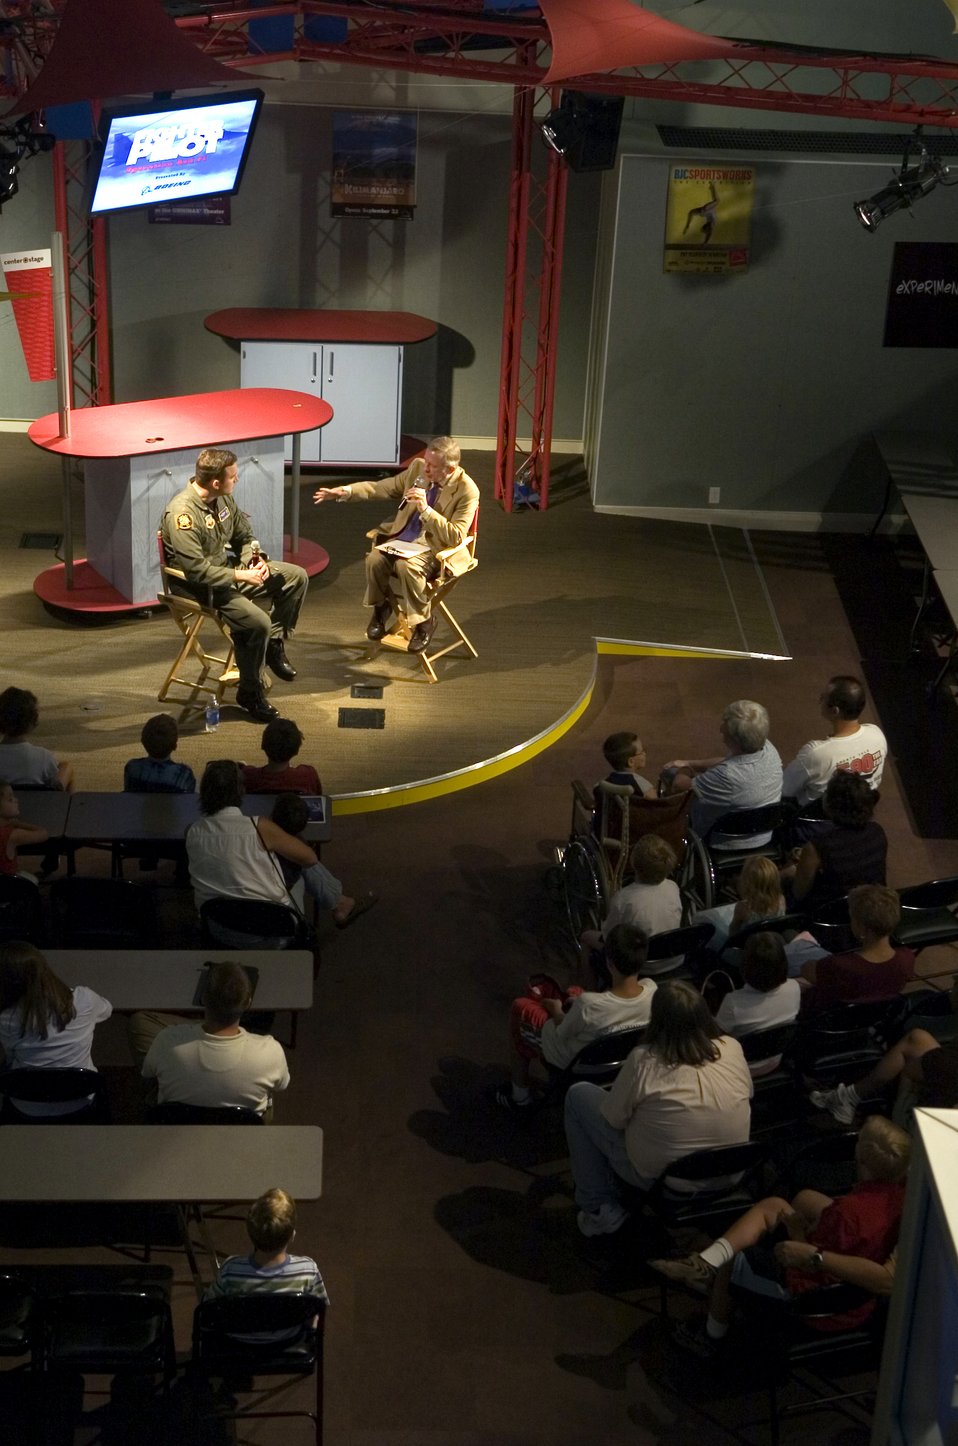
Focus on flight

Maj. Robert Novotney, the